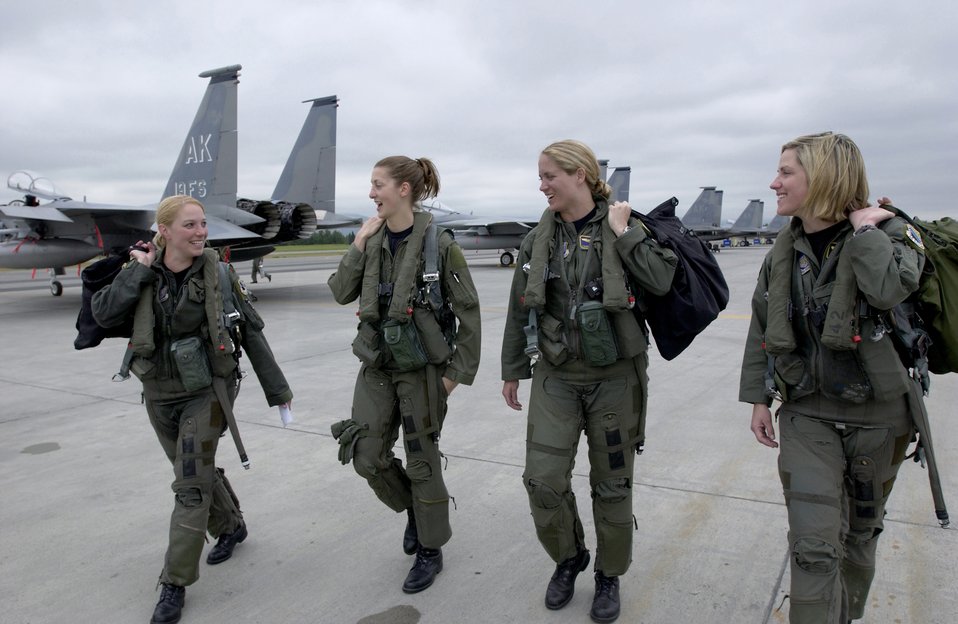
Four-ship fini flight

Four F-15 Eagle pilots from the 3rd Wing walk to their respective jets at Elmendorf Air Force Base, Alaska, on Wednesday, July 5, for the fini flight of Maj. Andrea Misener (far left). To her right are Capt. Jammie Jamieson, Maj. Carey Jones and Capt. Samantha Weeks.